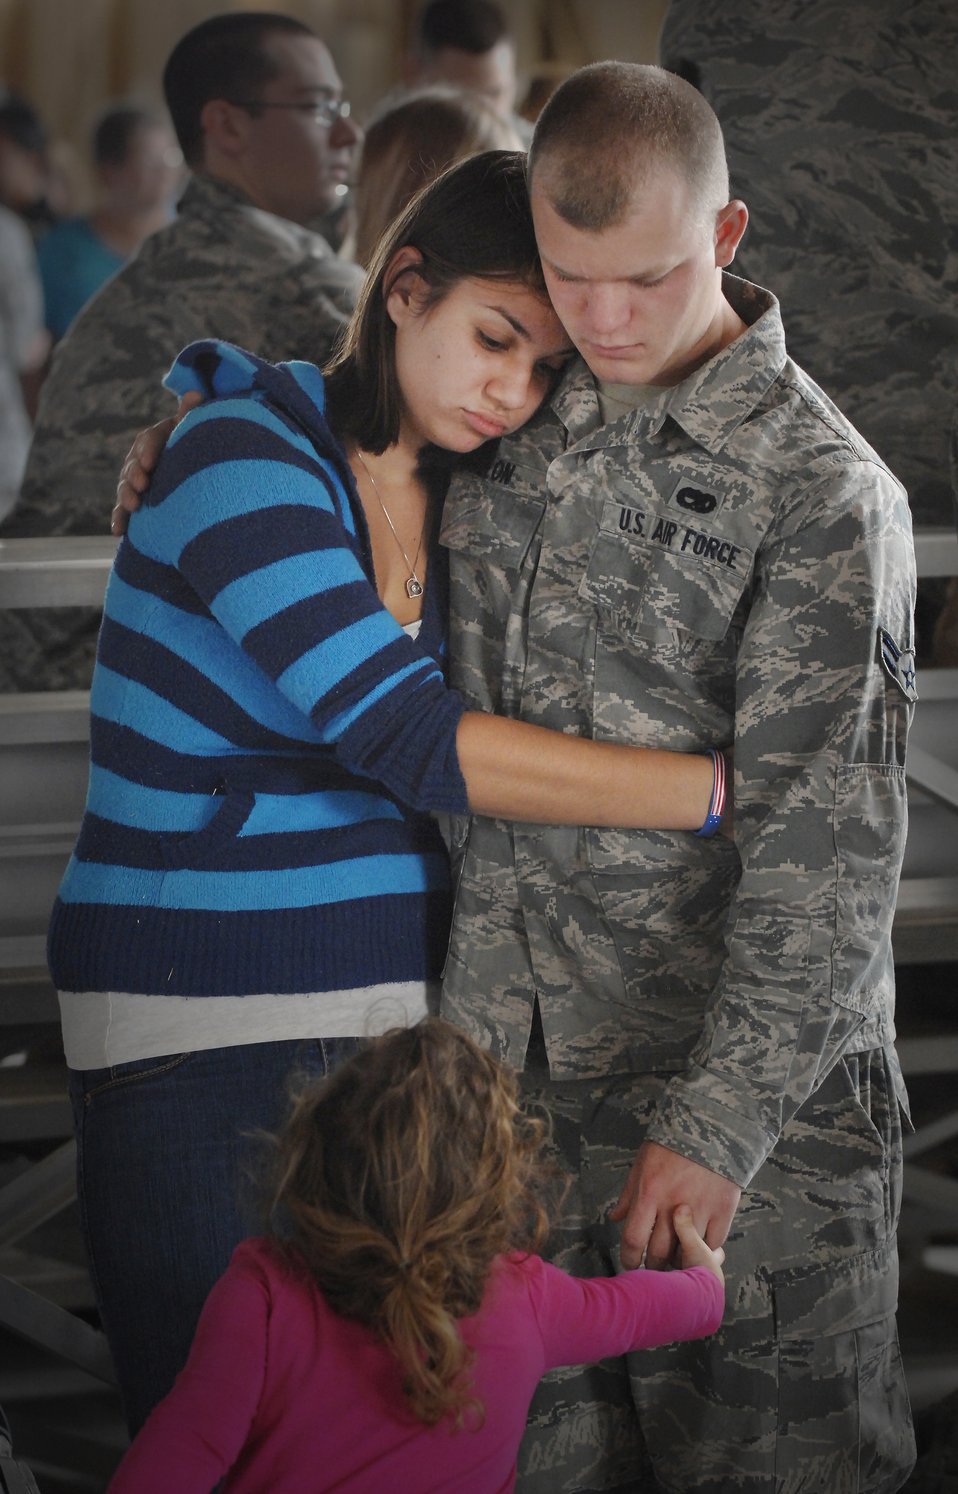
Saying goodbye

An Airman with the 20th Equipment Maintenance Squadron holds his wife and daughter before deploying Sept. 19, 2011, at Shaw Air Force Base, S.C.